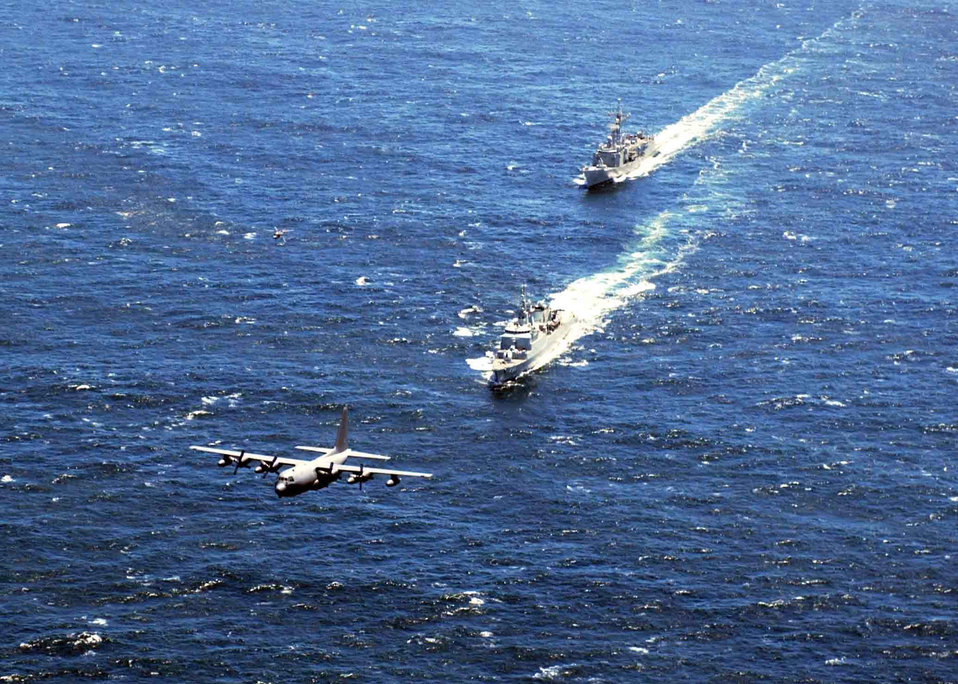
Follow me

MONTEVIDEO, Uruguay -- An Air Force MC-130P Combat Shadow from the 5th Special Operations Squadron passes over ships performing maneuvers during the Atlantic phase of Unitas, the premier multinational naval exercise in the region. Naval forces from Argentina, Uruguay, Brazil, Spain, and the United States are participating in the exercise. This is the first time in 46 years the exercise includes U.S Air Force Combat Shadows. The Air Force aircraft are participating in surveillance and search and rescue missions.